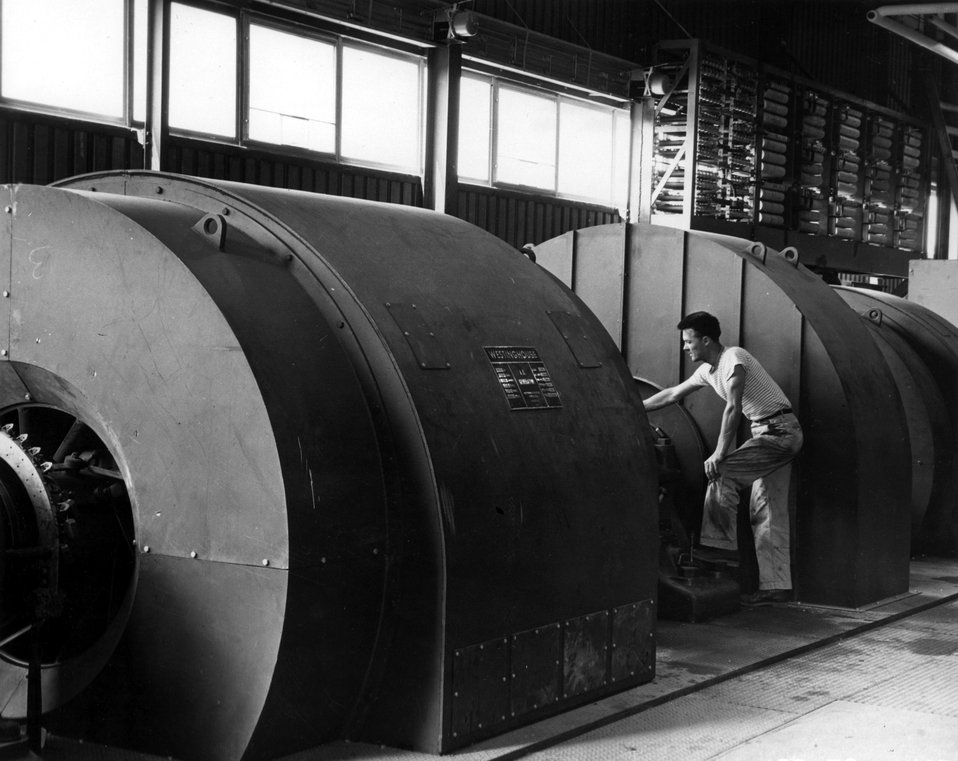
Motor generator set which supplies 40 million watts of power to energize
the giant magnet of the Cosmotron at the Brookhaven National Laboratory,
Upton, New York. The set is a 21,000 KVA unit.